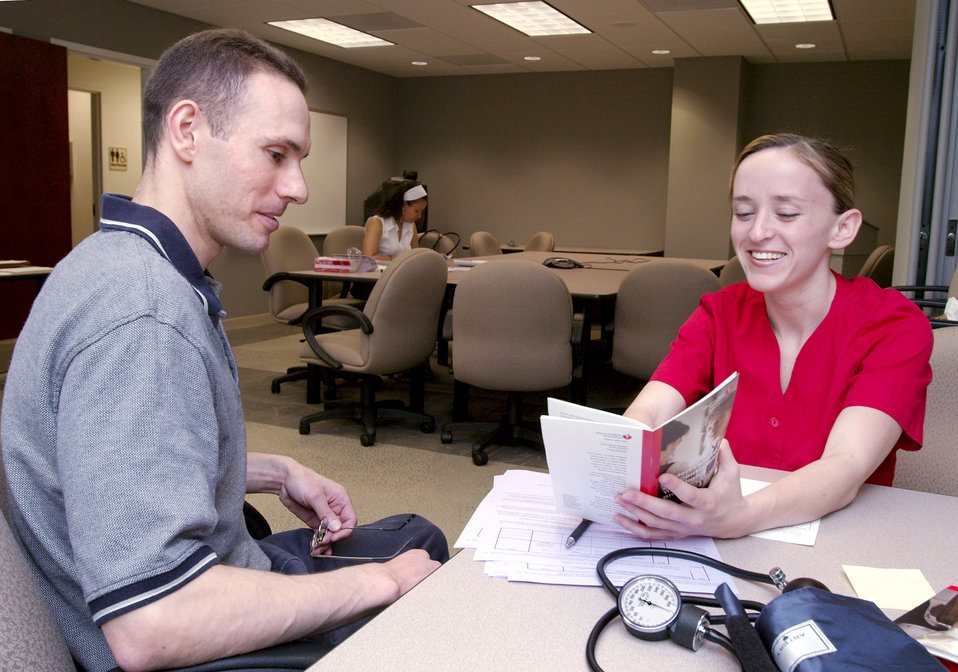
This 2005 photograph, taken at a CDC blood pressure screening event showed Regan Hall (right), of the National Center for Chronic Disease Prevention and Health Promotion (NCCDPHP), reviewing patient information with a fellow CDC employee who was about to undergo a blood pressure diagnostic test using the 'sphygmomanometer', or blood pressure cuff, seen in the lower right. The CDC campuses included in the screening event included Century Center, Chamblee, Corporate Square, Executive Park, Koger, and Roybal, and was provided by the Office of Women's Health (OWH), Office of Health and Safety (OHS), NCCDPHP's Cardiovascular Health Branch (CVH), as well as volunteers from various other centers, institutes, and offices (CIOs). This second annual event was held in observance of National High Blood Pressure Education Month, National Nurses Week, and National Women's Health Week.